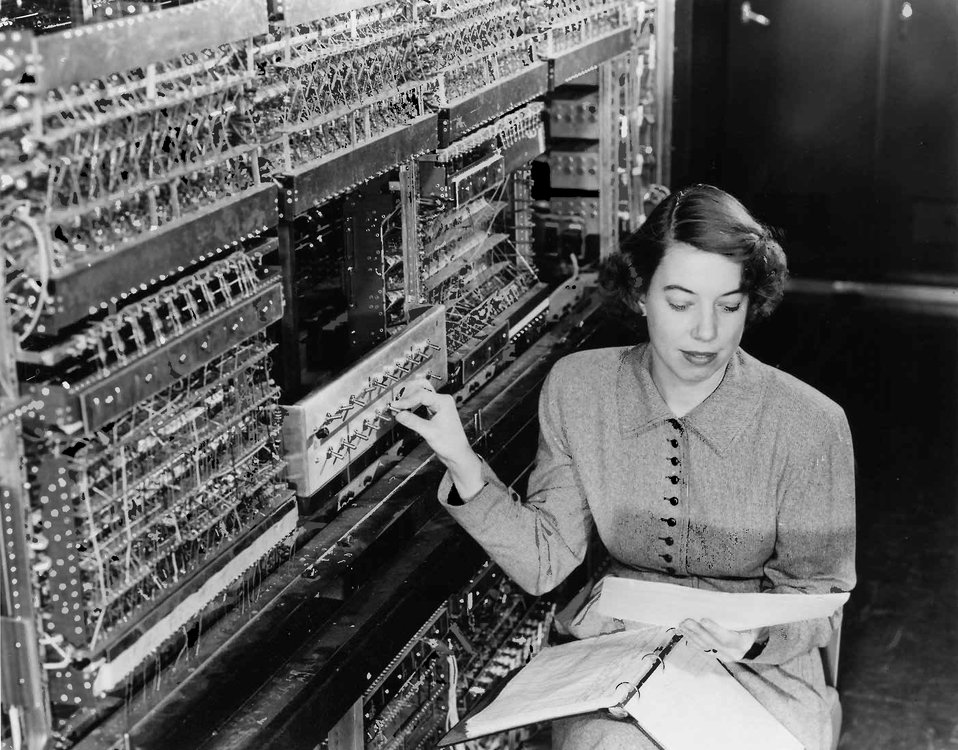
Living Large -- Argonne's First Computer

Before there was Google, or even the Internet, there was the computer -- and the earliest computers were so large that just one could occupy an entire room. AVIDAC was the first digital computer at Argonne National Laboratory, and began operating in 1953. It was built by the Physics Division for $250,000. Pictured here, with AVIDAC, is pioneer Argonne computer scientist Jean F. Hall. AVIDAC stands for 'Argonne Version of the Institute's Digital Automatic Computer' and was based on architecture developed by mathematician John von Neumann. | Photo courtesy of Argonne National Laboratory.

Photo of the Week: August 31, 2012